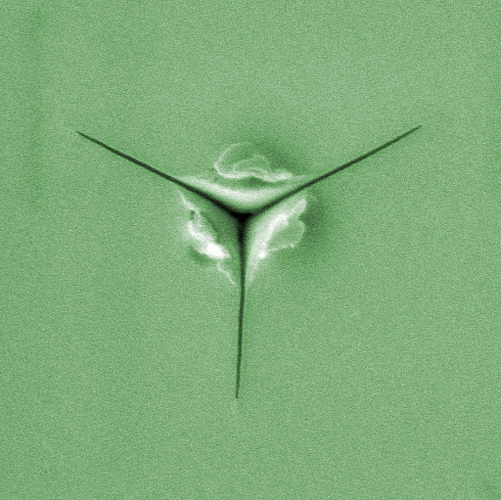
Semiconductors

Nanotough: Typical low-k film test for material toughness using the new NIST technique. The indentation instrument that punches the triangular hole registers the forces involved. That plus the length of the resulting cracks determines the toughness of the film, which is about 2.4 micrometers thick. (Color added for clarity.)